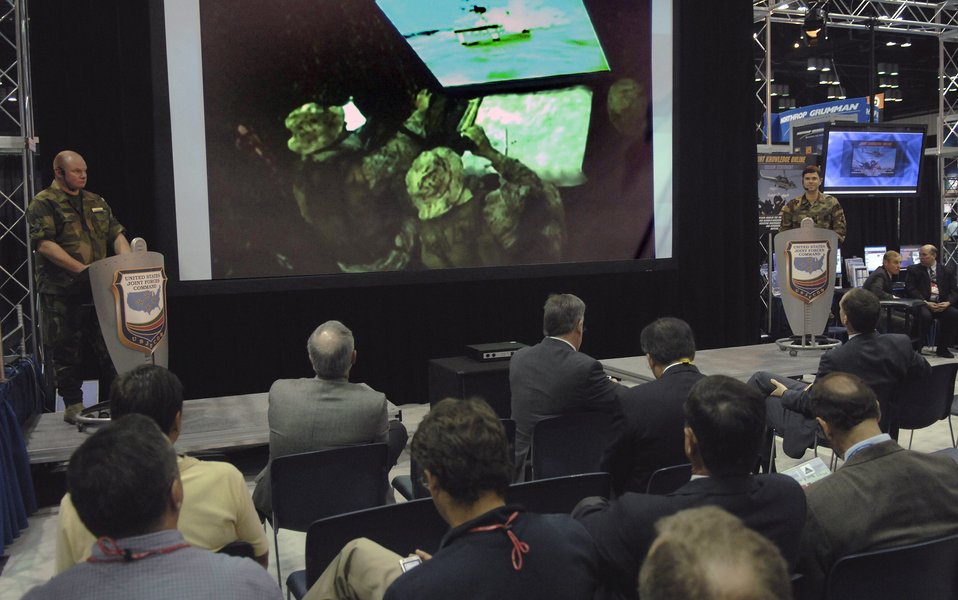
Conference makes virtual training a reality

Swedish Lt. Col. Ulf Jinnestrend (left) and Maj. Emanuel Cohan brief industry leaders while watching a simulated hostage rescue mission Nov. 27 during the Interservice/Industry Training, Simulation and Education Conference in Orlando, Fla. Colonel Jinnestrend is the Swedish armed forces operations directorate director of staff, and Major Cohan is the U.S. Central Command communications planner at Joint Forces Commnad.